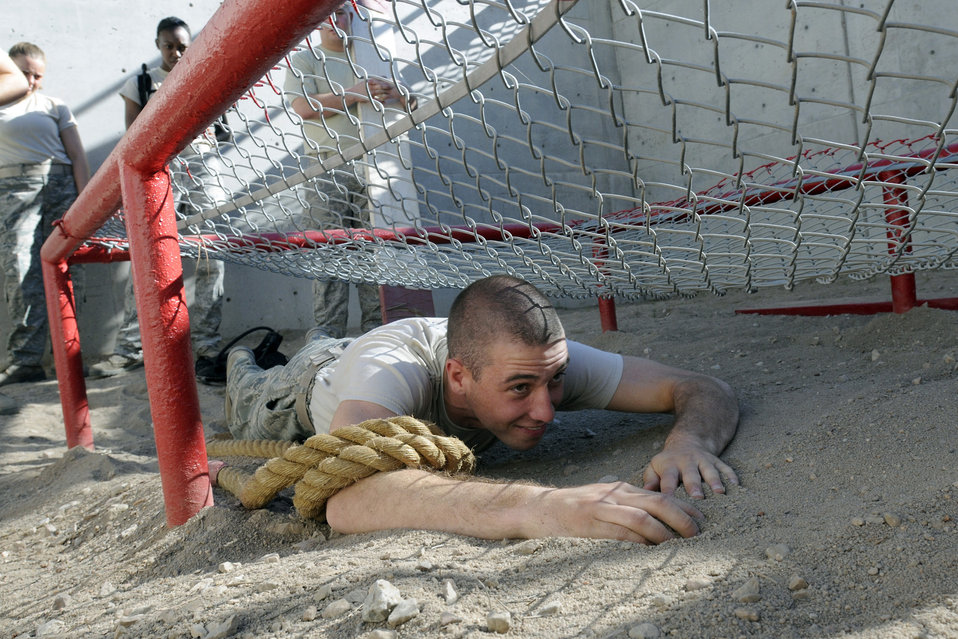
Cadets learn essential skills in Leadership Reaction Obstacle Course

Basic Cadet Alexander R Pecci III crawls through an obstacle at the leadership reaction course during basic cadet training at the U.S. Air Force Academy, Colo. July 16, 2010. The cadets learned essential problem solving and leadership techniques by working through 15 challenging obstacles.